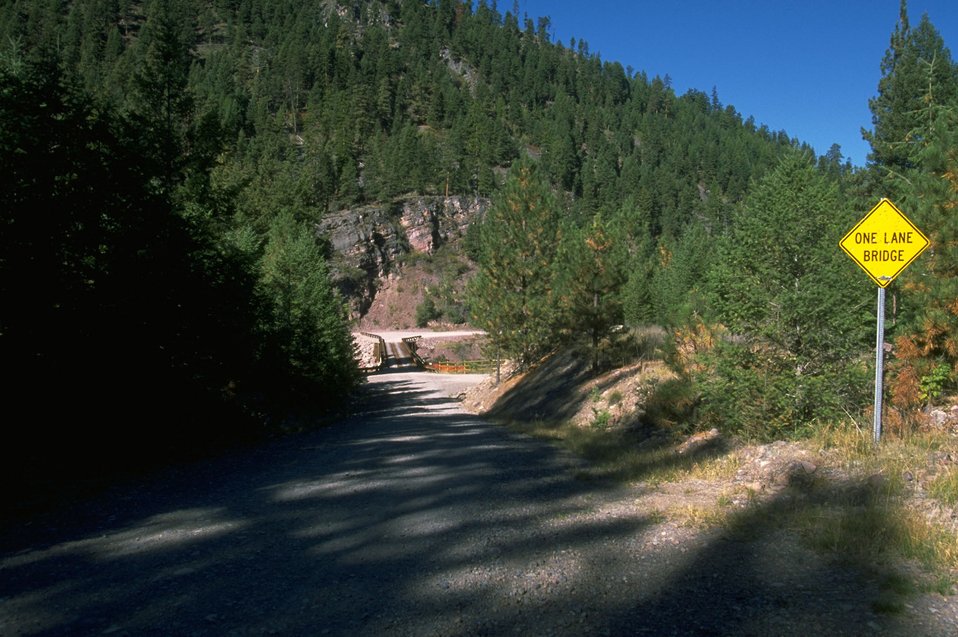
Whitaker Bridge that crosses the Blackfoot River